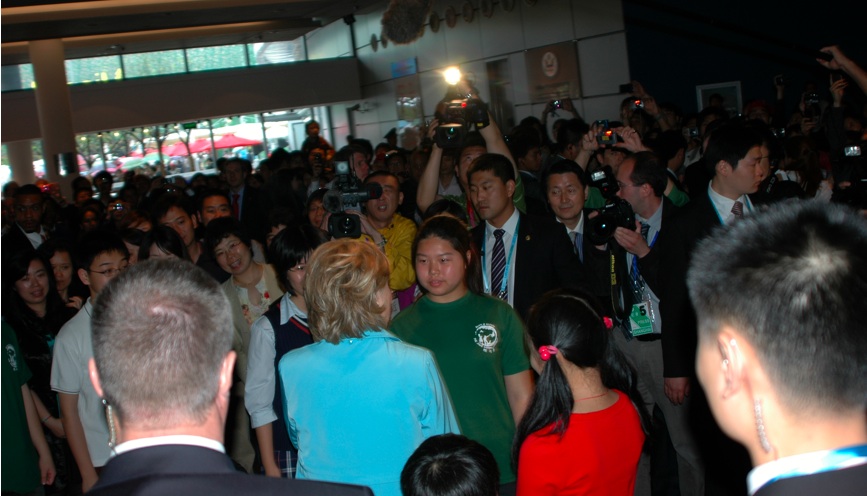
Secretary Clinton Speaks With Chinese Students

U.S. Secretary of State Hillary Rodham Clinton speaks with Chinese students at the USA Pavilion, part of the 2010 World Expo in Shanghai, China, May 22, 2010.